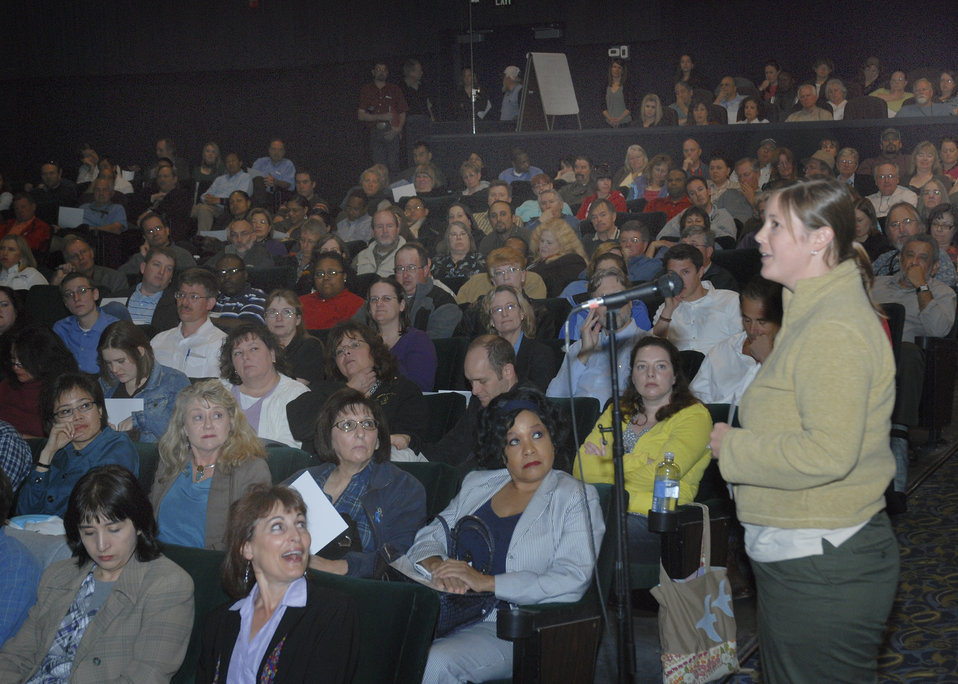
The U.S. Department of Agriculture (USDA) held the Cultural Transformation Employee listening sessions in Davis, CA, on Monday, April 12, 2010. USDA employees expressed their concerns with issues at the Department and made suggestions for correcting them and improving the image of USDA. USDA photo 10di1297-0073.